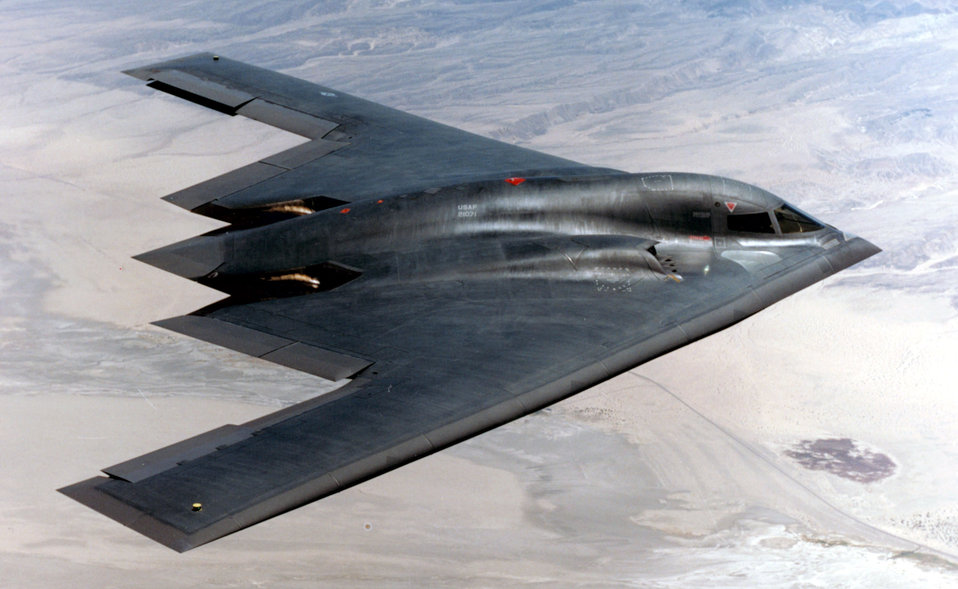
Stealth bomber

The B-2 Spirit is a multi-role bomber capable of delivering both conventional and nuclear munitions. A dramatic leap forward in technology, the bomber represents a major milestone in the U.S. bomber modernization program. The B-2 brings massive firepower to bear, in a short time, anywhere on the globe through previously impenetrable defenses.